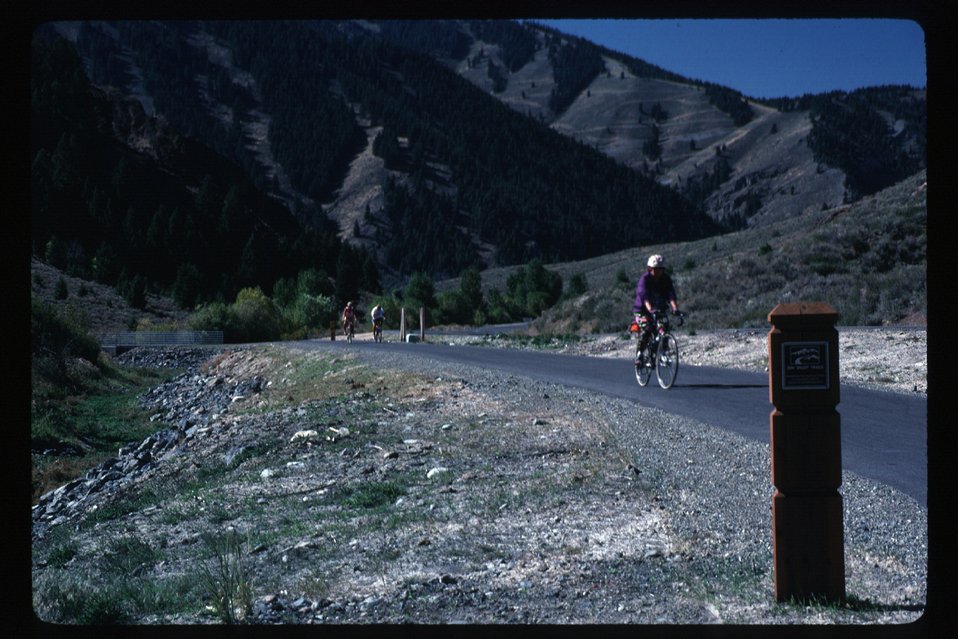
Recreation Scenic Biker Shoshone Field Office USRD Upper Snake River District